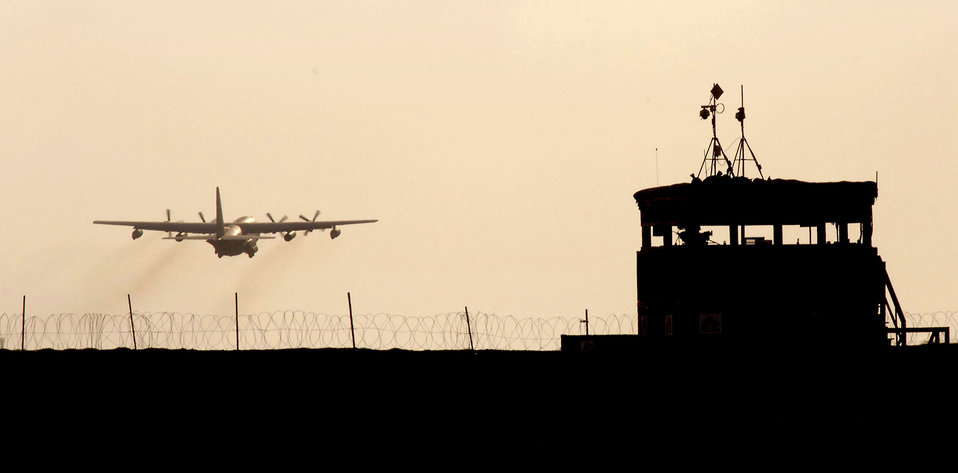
Airmen continue humanitarian efforts in Djibouti

An HC-130 P/N takes off from Camp Lemonier May 1 on its way down range in support of the Combined Joint Task Force-Horn of Africa mission. The CJTF-HOA is a unit of United States Central Command. The organization's mission is to prevent conflict, promote regional stability and protect coalition interests in order to prevail against extremism. More than 1,500 people from each branch of the military, civilian employees, coalition forces and partner nations make up the organization.